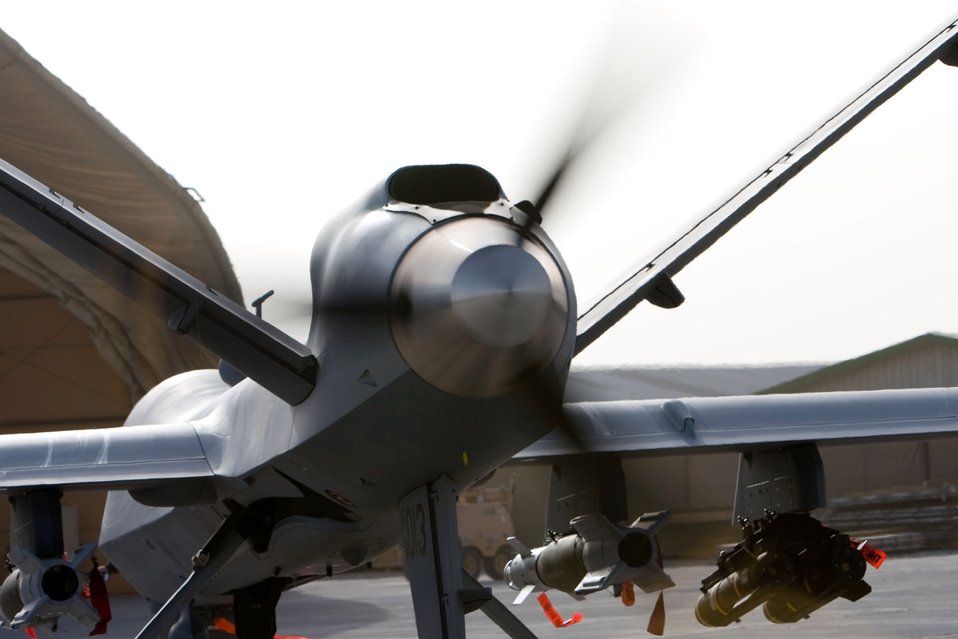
Air Force's hunter-killer UAV now flying in Afghanistan

An MQ-9 Reaper goes through an engine check on a ramp in Afghanistan Oct. 1.